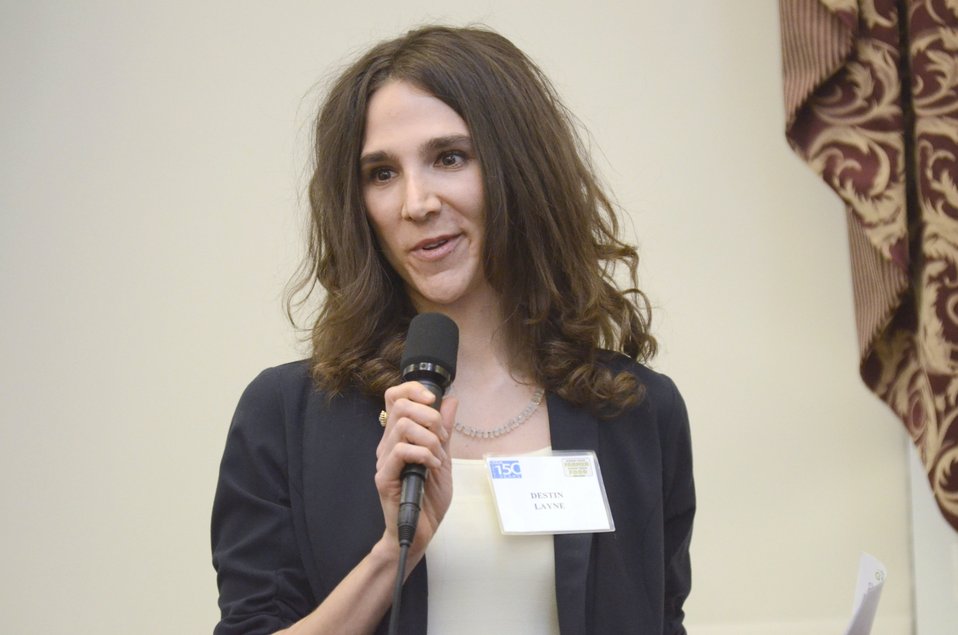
Destin Joy Layne, Grace Foundation, NY. Grace Foundation is a leader in the intersection of data usage in web platforms that support local food systems. One of their platforms, the Eat Well Guide, has utilized the USDA Farmers Market Directory. Grace Foundation is also a major foundation supporter of food hubs. Ms. Layne made remarks at the continuation of the National Conversation on Local and Regional Food projects and how they offer economic opportunities to local farmers, ranchers and food entrepreneurs. The virtual conversation took place from the White House, and Twitter was used to expand the conversation worldwide, from Washington, D.C., on Monday, March 5, 2012. Unlike most events where mobile communication devices are asked to be turned off, here it was asked that they remain on allowing people to have social media conversations. USDA Photo by Lance Cheung. Foundation is also a major foundation supporter of food hubs.